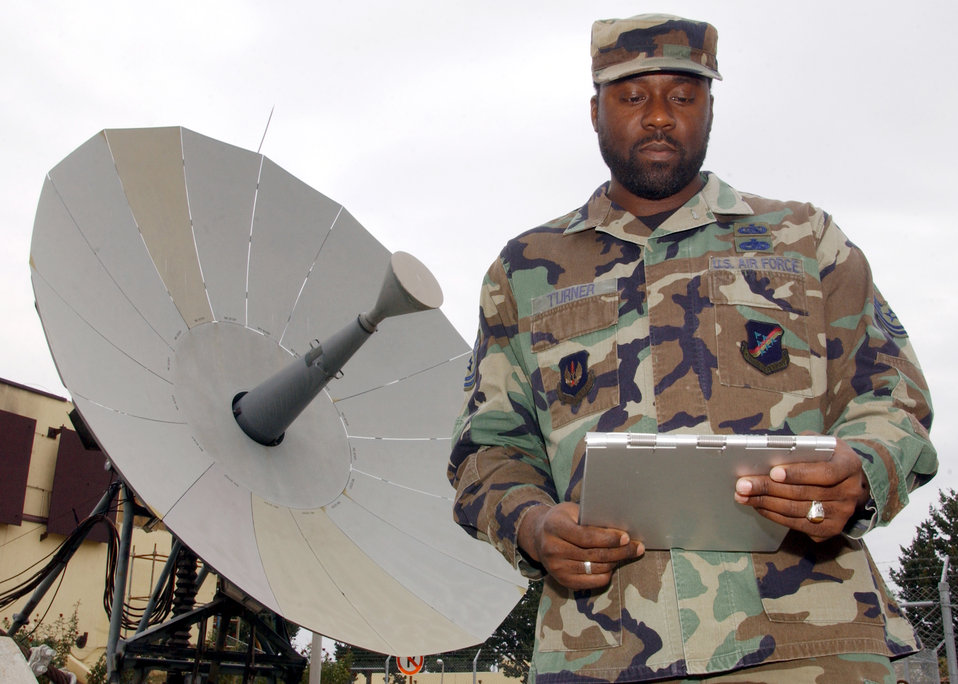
Inspecting equipment

INCIRLIK AIR BASE, Turkey -- Tech. Sgt. Glynis Turner inspects satellite communications equipment here. During his free time, he is the Islamic lay leader for the base chapel which welcomes all religions. Turner is a quality assurance evaluator with the 39th Communications Squadron.